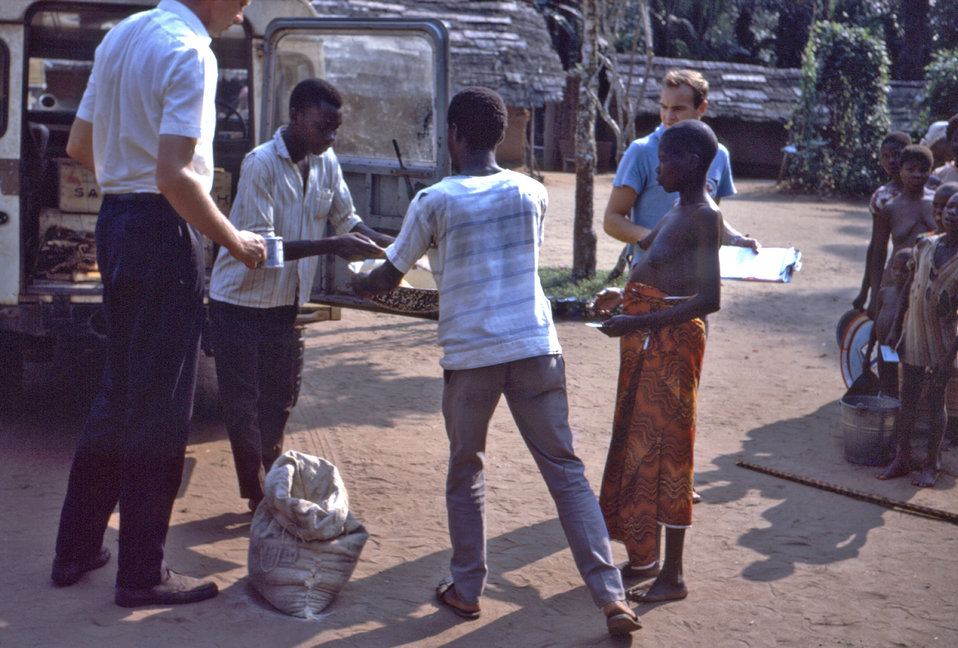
This 1968 photograph showed former CDC Director, William H. Foege, M.D., M.P.H., assisting in the distribution of dry food rations after the nutritional assessment of refugees was determined, which took place during the Nigerian-Biafran civil war.